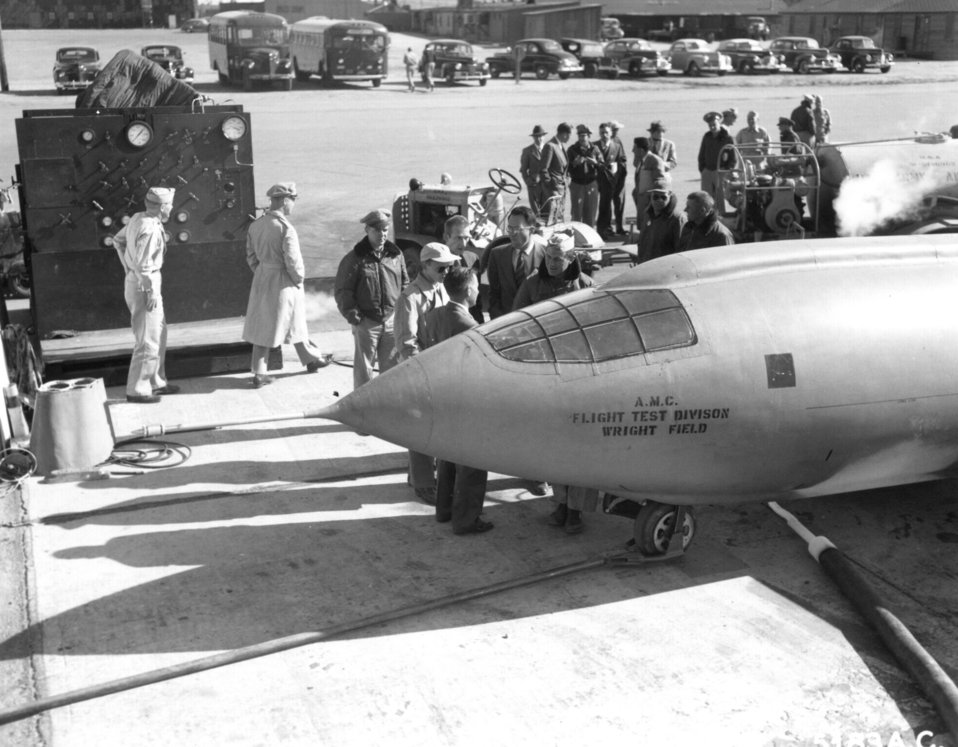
Bell X-1

1940's -- On October 14, 1947, the Bell X-1 became the first airplane to fly faster than the speed of sound. Piloted by U.S. Air Force Capt. Charles E.